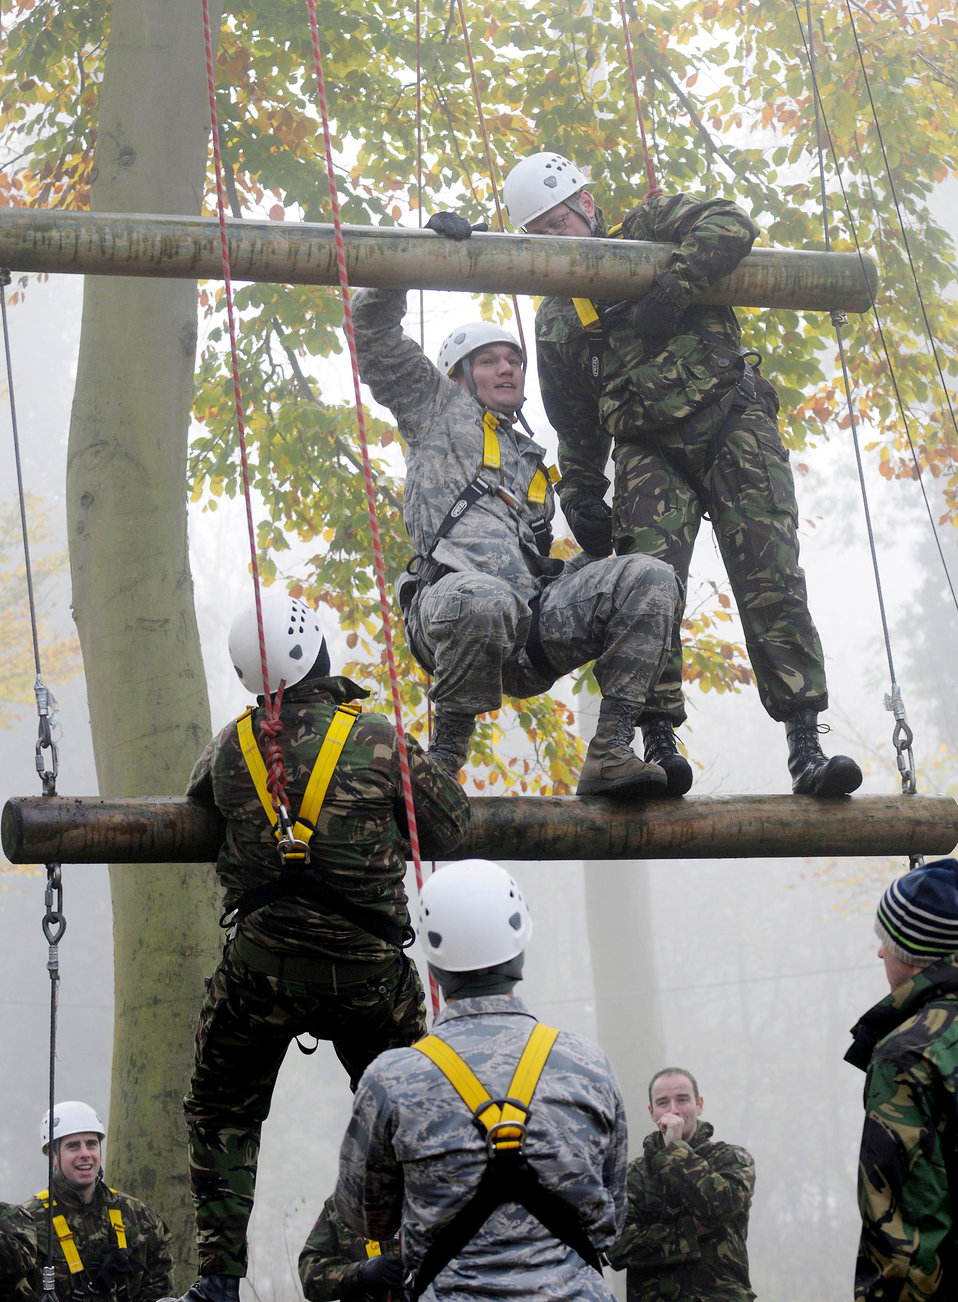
American, British forces join for leadership development

Tech. Sgt. Jason Conley (second from top) participates in the high-ropes course at Royal Air Force Marham with British airmen as part of the RAF's Leadership, Ethos and Air Power Day Nov. 9, 2009. Forty U.S. Airmen from RAFs Mildenhall and Lakenheath joined the exercise to build relationships and share leadership techniques. Sergeant Conley is from the 48th Medical Support Squadron.